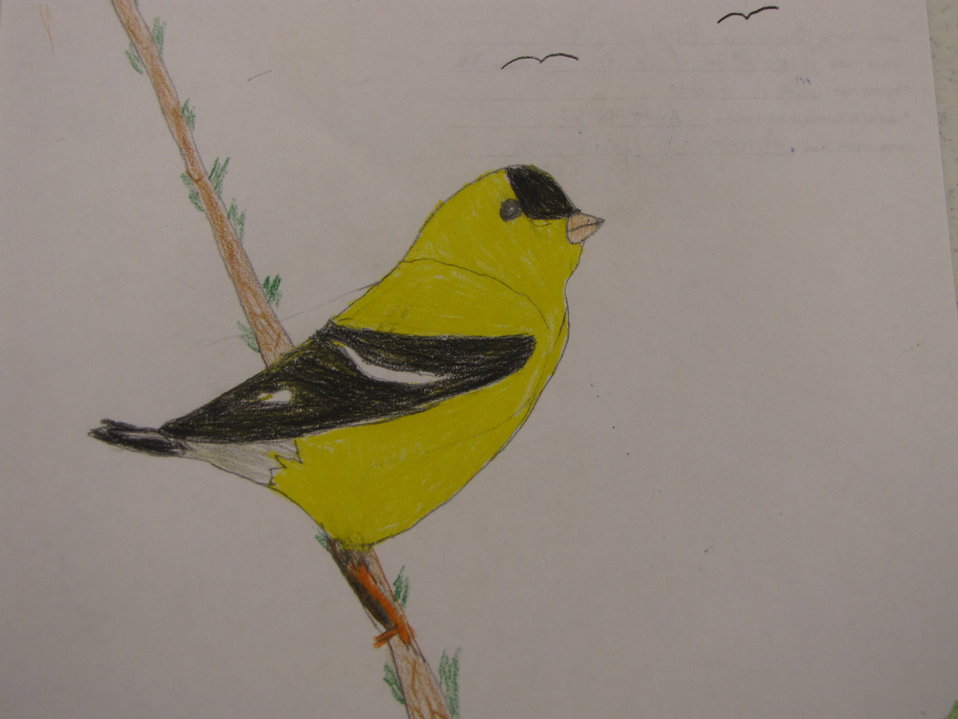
American goldfinch, by Cheyenne Phillips - 5th Grade. One of the class winners for the annual Bird Banner competition. Community school kids draw and color migratory birds and 90 of the winners from over 1000 entries are turned into poster-sized banners to hang down main street of Brigham City this summer.